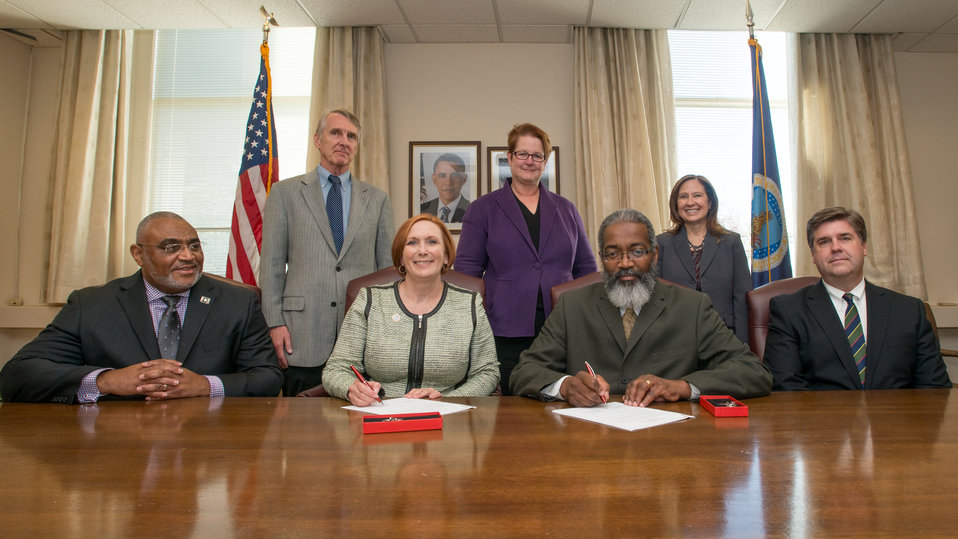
Prior to signing a Memorandum Of Understanding (MOU) with (right-left) Federal Managers Association (FMA) Executive Director Todd V. Wells, U.S. Department of Agriculture (USDA) Assistant Secretary for Administration Dr. Gregory Parham, FMA National President Patricia J. Niehaus, and USDA DM Deputy Assistant Secretary for Administration Malcom Shorter on Wednesday, Nov. 21, 2013 at USDA headquarters in Washington, D.C. Also witnessing the signing are (right-left) Office of Human Resources Management (OHRM) Provost Karlease E. Kelly, Deputy Director Bobbi Jeanquart, and DM Assistant Secretary for Administration Chief of Staff Curtis Wiley.